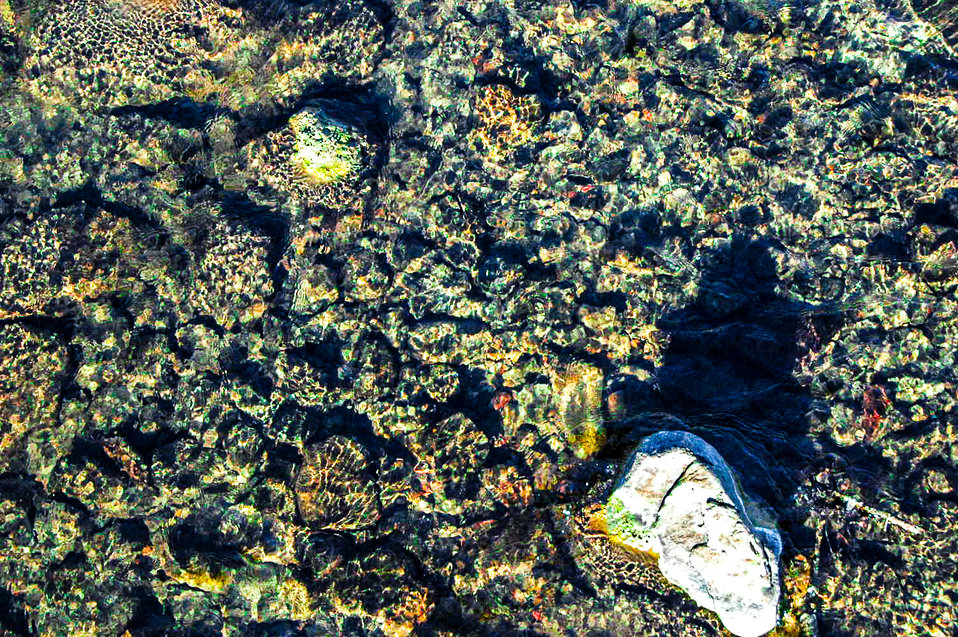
Hidden Colors